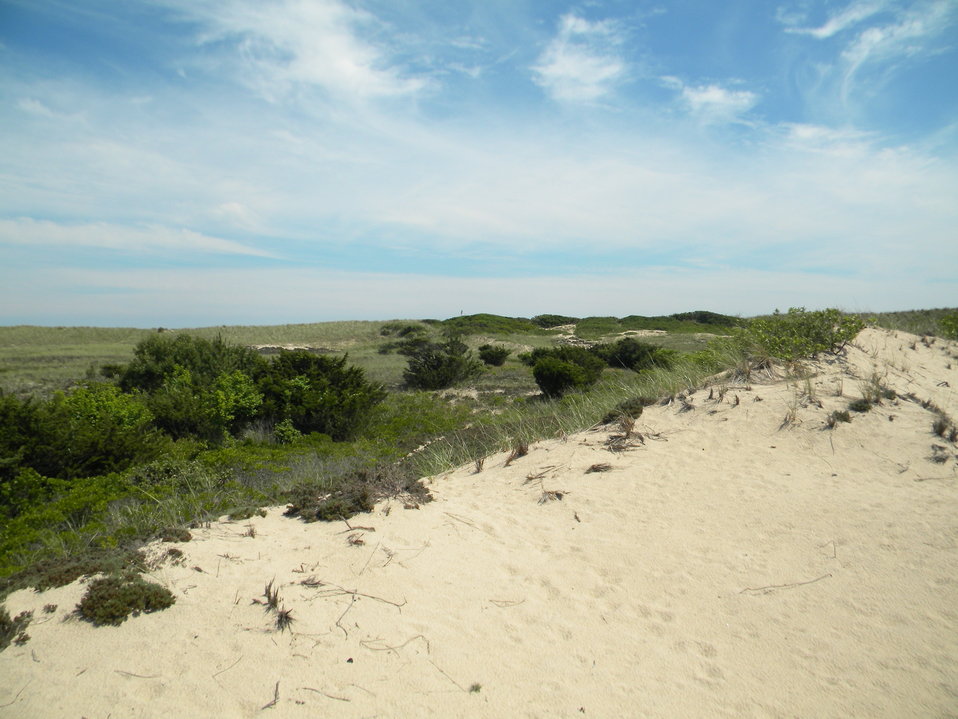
Double dune

Dunes at Amagansett National Wildlife Refuge.